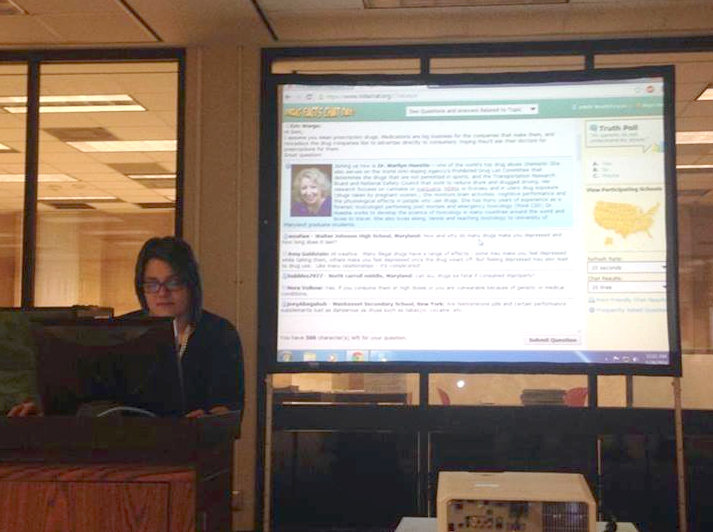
U of North Texas Chat Day at Willis Library